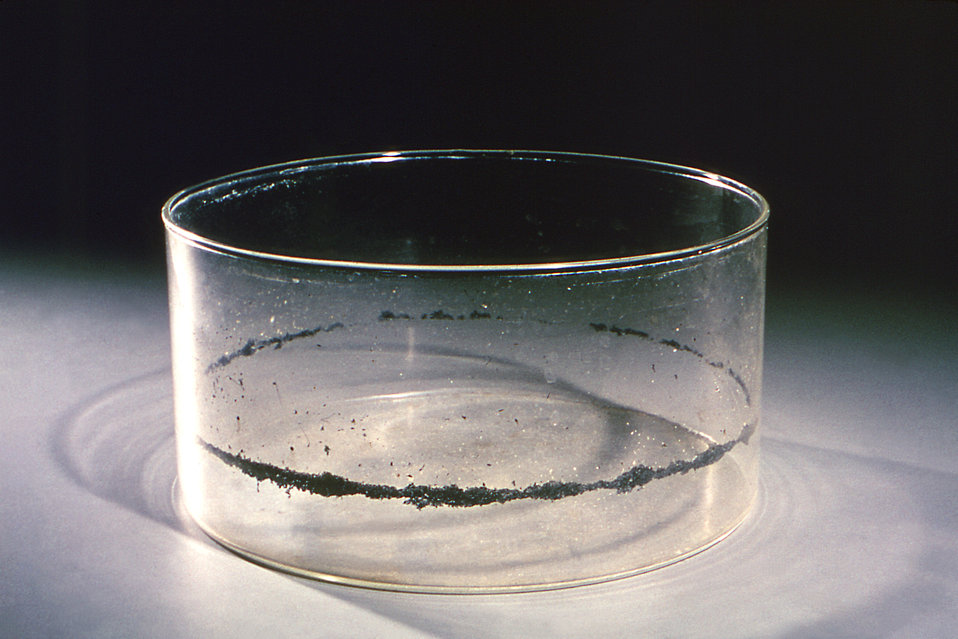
Eggs of Aedes aegypti mosquito in glass container. Parasite.